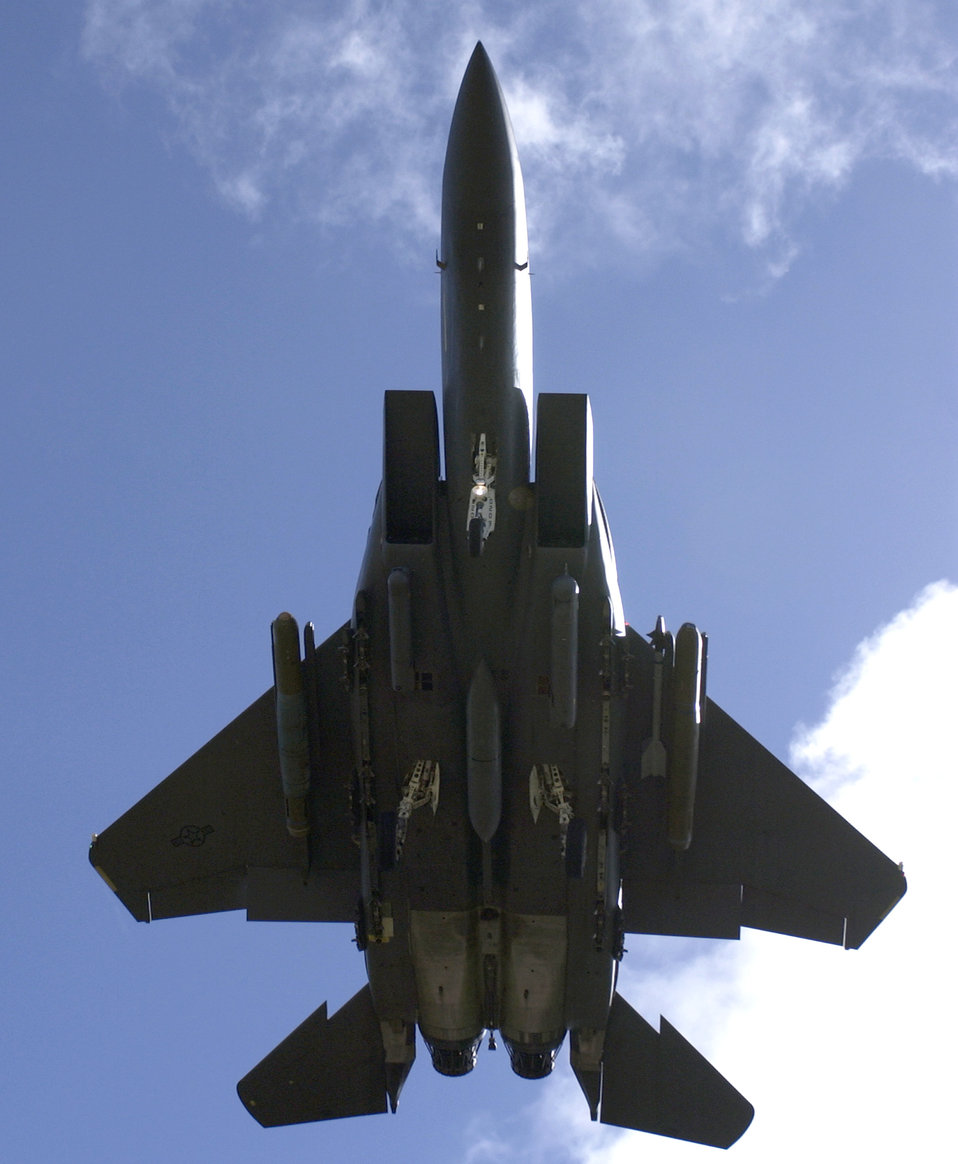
Strike Eagles stay sharp

An F-15E Strike Eagle from Elmendorf Air Force Base, Alaska, prepares to land at Andersen AFB, Guam, on Wednesday, June 14. The Strike Eagles are here through September as part of an air expeditionary deployment.